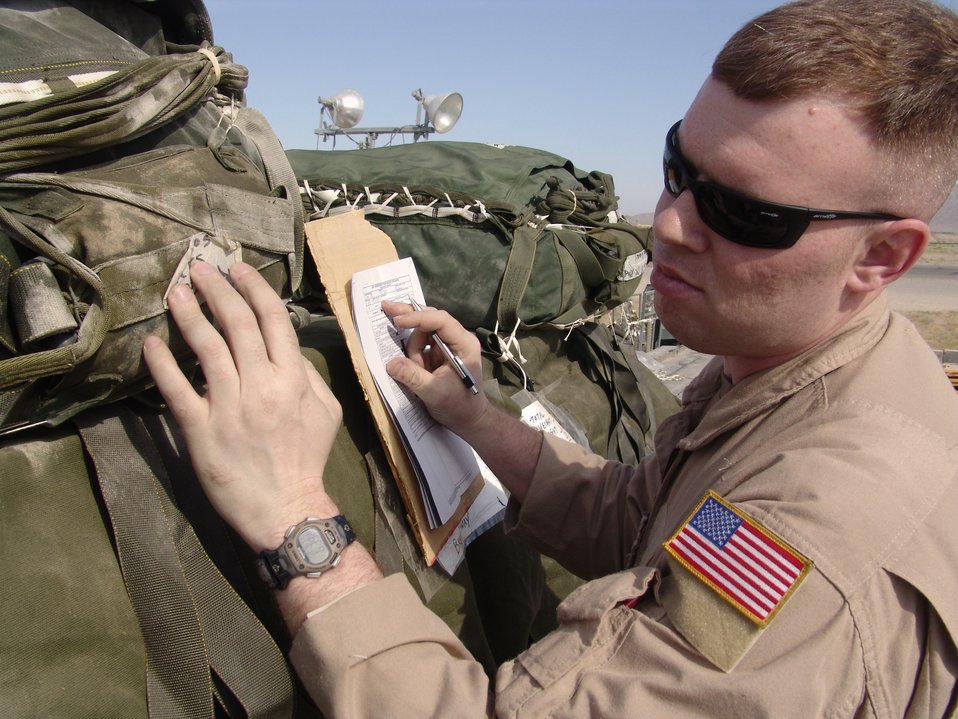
Hercules supply mission

SOUTHWEST ASIA -- Staff Sgt. John Brockman inspects containerized delivery system pallets onboard a K-loader at Kandahar Air Base, Afghanistan. Each humanitarian pallet contained basic medical supplies, food and blankets. The pallets were airdropped from a C-130 Hercules to Soldiers in rural areas of Afghanistan, and the supplies were distributed to needy villagers in the local area. Sergeant Brockman is a loadmaster with the 737th Expeditionary Airlift Squadron at a forward-deployed location and is from Pope Air Force Base, N.C.